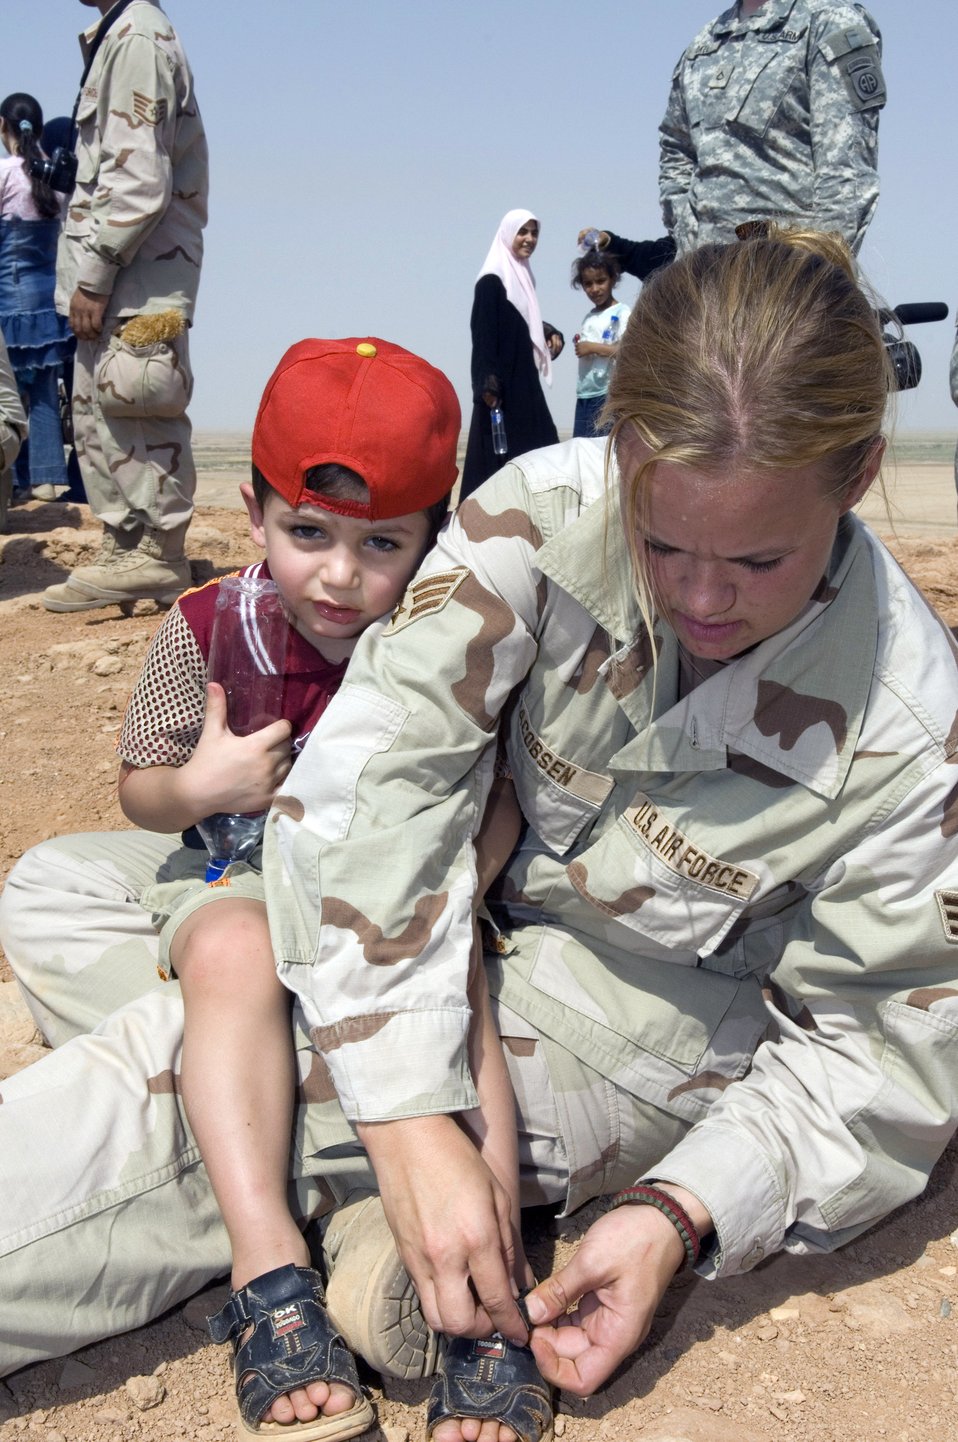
Americans, Iraqis interact at historical monument

Senior Airman Ashley-Louise Jacobsen helps a young Iraqi boy get a rock out of his sandal during an Aug. 21 visit by 80 Iraqi nationals to the historical Ziggurat located on Ali Air Base, Iraq. The Ali AB First Four Council sponsored the visit. This is the first time in more than 10 years that Iraqi civilians have been allowed to step on the grounds of the historical site, which was built in the ancient city of Ur and includes the house of the biblical prophet Abraham. Airman Jacobsen is a member of the 407th Expeditionary Logistics Readiness Squadron at Ali AB.